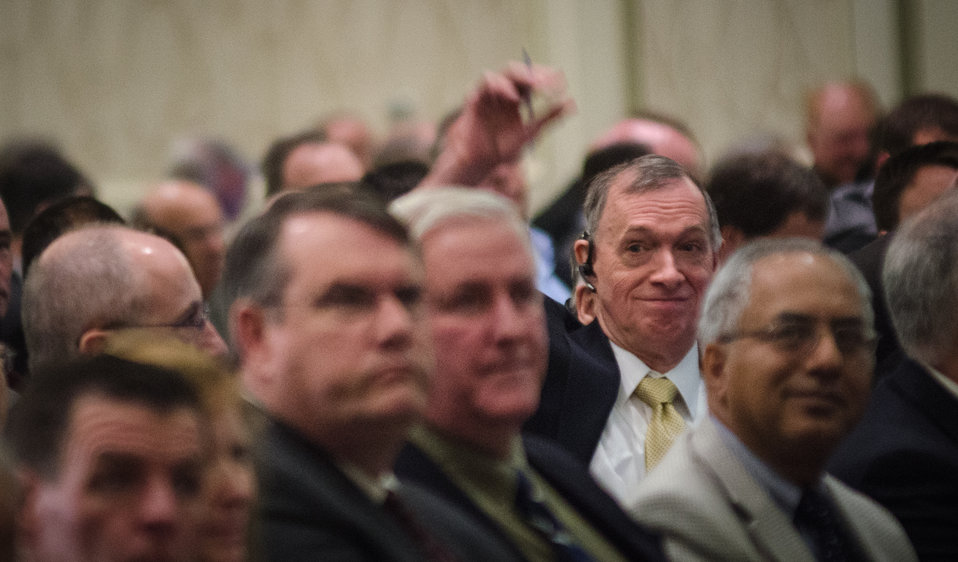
Hands went up when there was a call for questions at the 2013 Agricultural Outlook Forum, held at the Crystal Gateway Marriott Hotel, Arlington, VA on Thursday, Feb. 21, 2013. This annual Forum brings together producers, policymakers, and business, government, and industry leaders to meet, exchange ideas, and discuss timely agriculture issues.